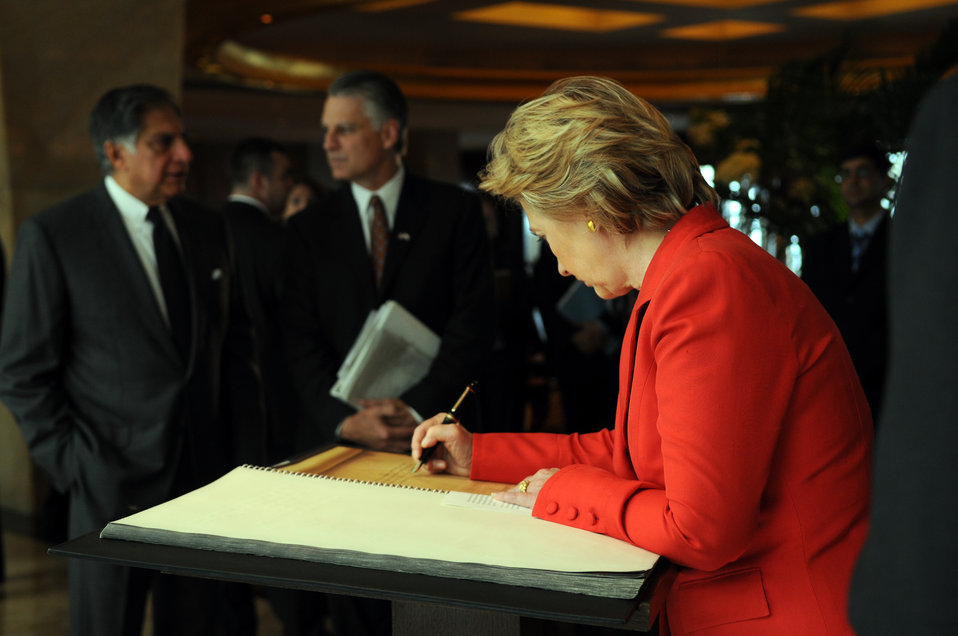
Secretary Clinton Signs Memorial Book at Taj Mahal Palace Hotel

U.S. Secretary of State Hillary Rodham Clinton signs the November 26, 2008 memorial book at the Taj Mahal Palace Hotel in Mumbai. Ratan Tata, Chairman of the Tata Group (L), and Timothy J. Roemer, U.S. Ambassador-Designate to India (R), stand in the background.